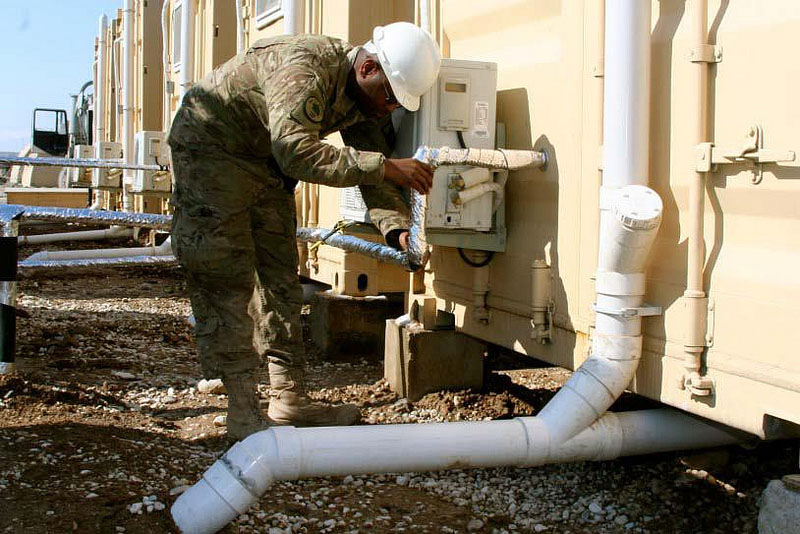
Deployed engineer

Air National Guard Staff Sgt. Arthur Mitchell, a civil engineer with the 577th Expeditionary Prime BEEF (Base Emergency Engineer Force) Squadron at Camp Marmal, checks a pipe of a Latrine-Shave-Shower (LSS) unit for plumbing issues. The 577th EPBS serves the role of civil engineer throughout Afghanistan and is a part of the International Security Assistance Force.